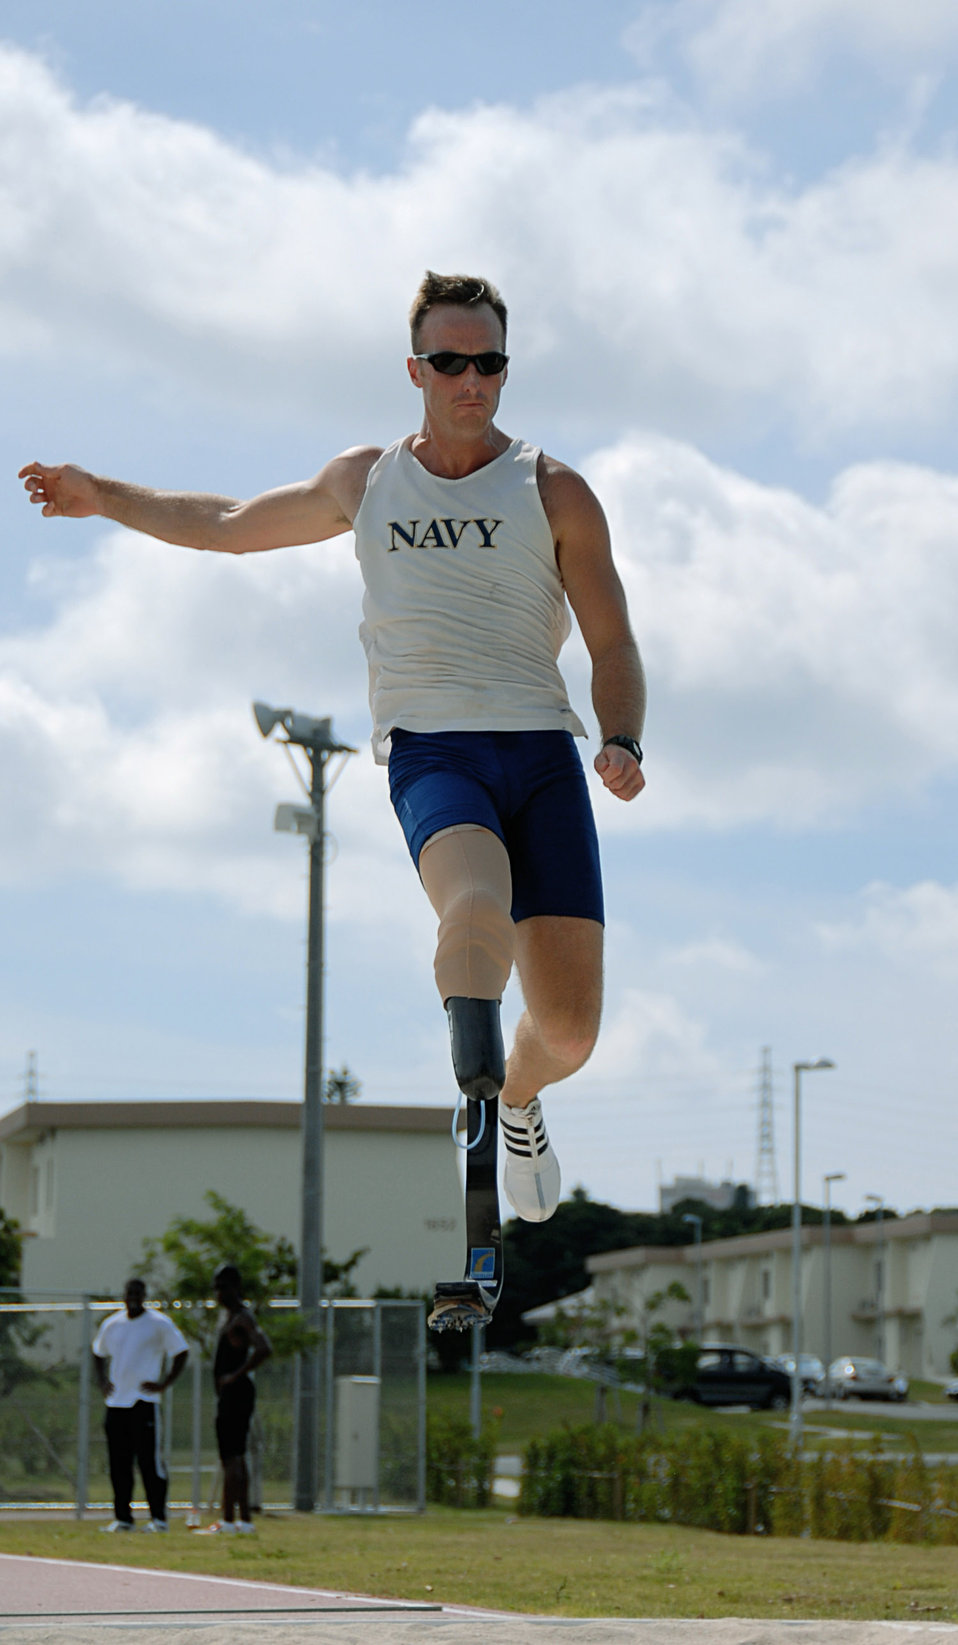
Paralympic athletes train at Kadena

Navy Petty Officer Casey Tibbs of San Diego, Calif., practices the long jump during pentathlon training Aug. 26 at Ryukyu Middle School on Kadena Air Base, Japan. More than 100 athletes and support staff from the U.S. Paralympics track and field and swim teams arrived on Kadena AB Aug. 24 to live and train for the next ten days in preparation for the 2008 Paralympic Games being held in Beijing, China, Sept. 6.